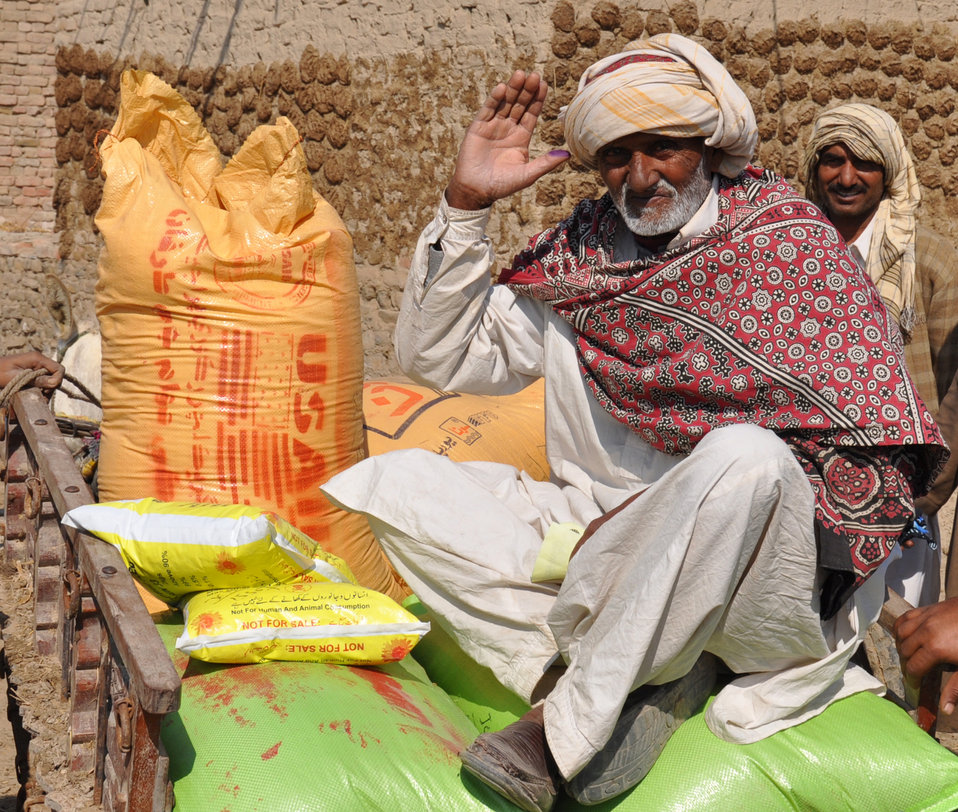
USAID Sindh Agricultural Recovery Program

Jacobabad, February 2011 - A farmer from Jacobabad takes home seeds and fertilizer provided by the American people through USAID. USAID’s $15 million Sindh Agricultural Recovery Program is helping Sindh farmers plant crops in flood-affected areas. The program is implemented by Rural Support Programs Network, Sindh Rural Support Organization, the Sindh Abadgar Board, and other local organizations such as National Rural Support Program.